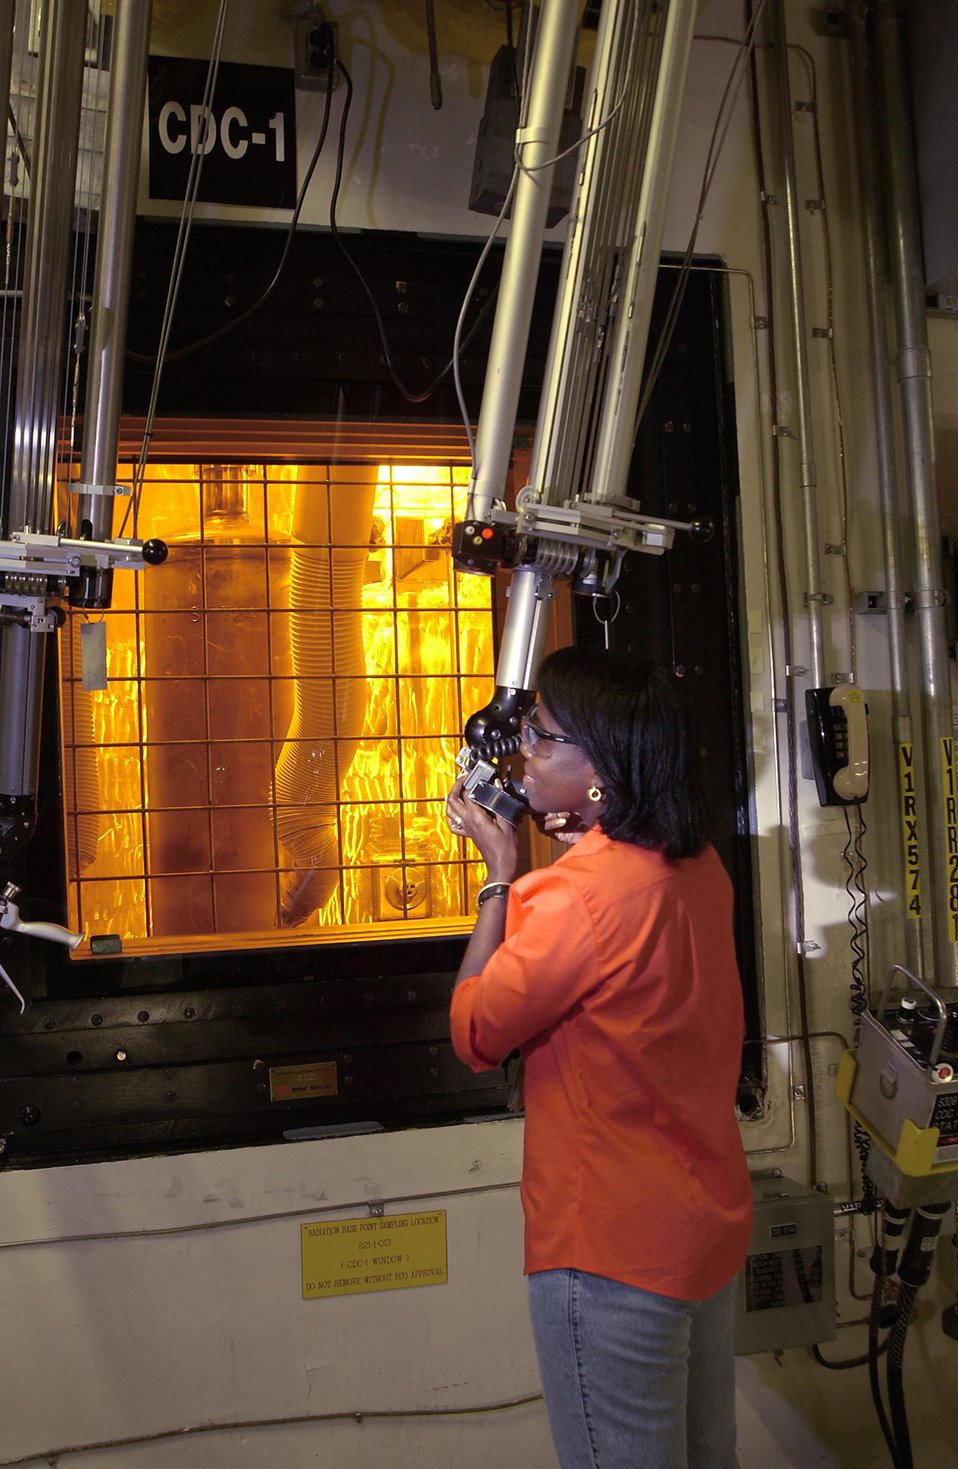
EMPLOYEE OPERATES REMOTE ARM AT THE DEFENSE WASTE PROCESSING FACILITY.

THE DWPF IS DESIGNED TO CONVERT HIGH LEVEL LIQUID DEFENSE NUCLEAR WASTE INTO BOROSILICATE GLASS, A STABLE FORM SUITABLE FOR STORAGE, TRANSPORTATION AND REPOSITORY STORAGE. THE WASTE TO GLASS PROCESS IS KNOWN AS VITRIFICATION. THE RADIOACTIVE WASTE IS FUSED WITH SAND AT A TEMPERATURE OF 2,000 DEGREES IN A LARGE CRANE OPERATED STEEL MIXER, POURED INTO STAINLESS STEEL CANISTERS TO HARDEN INTO A BLACK GLASS. THE SEALED CANISTERS ARE STORED VERTICALLY IN SLOTS ON A CONCRETE SLAB UNTIL THEY CAN BE MOVED TO A SAFE REPOSITORY.